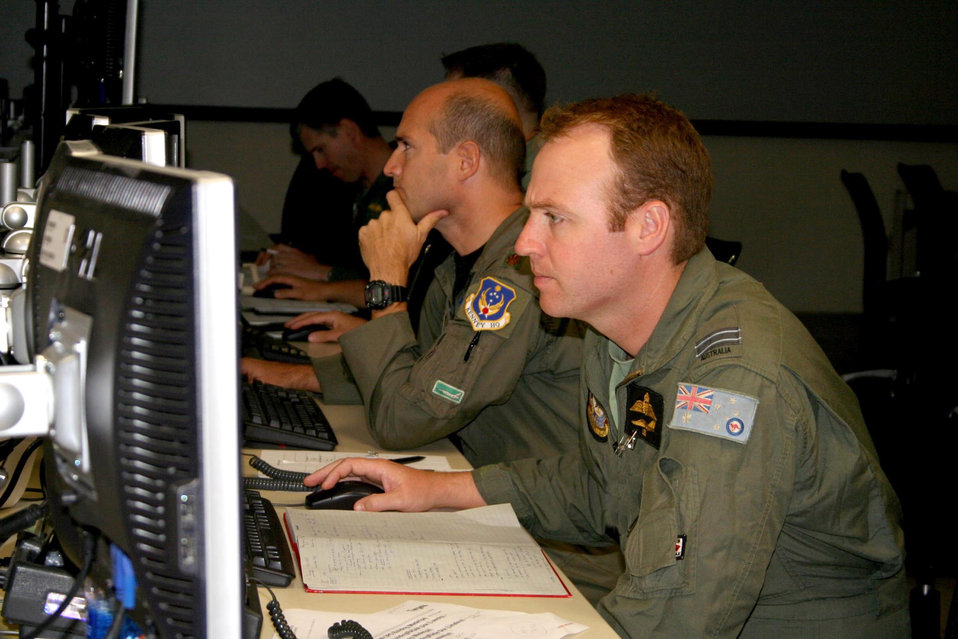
Exercise brings Australian, U.S. forces together

Royal Australian Air Force Flight Lt. Leo Lochran and Maj. Paul Arbizzani work in the Dynamic Targeting Cell on the Air Operations Center operations floor during Exercise Talisman Saber '07 May 24 at Hickam Air Force Base, Hawaii. Major Arbizzani is assigned to the 613th Air and Space Operations Center Combat Operations Division.